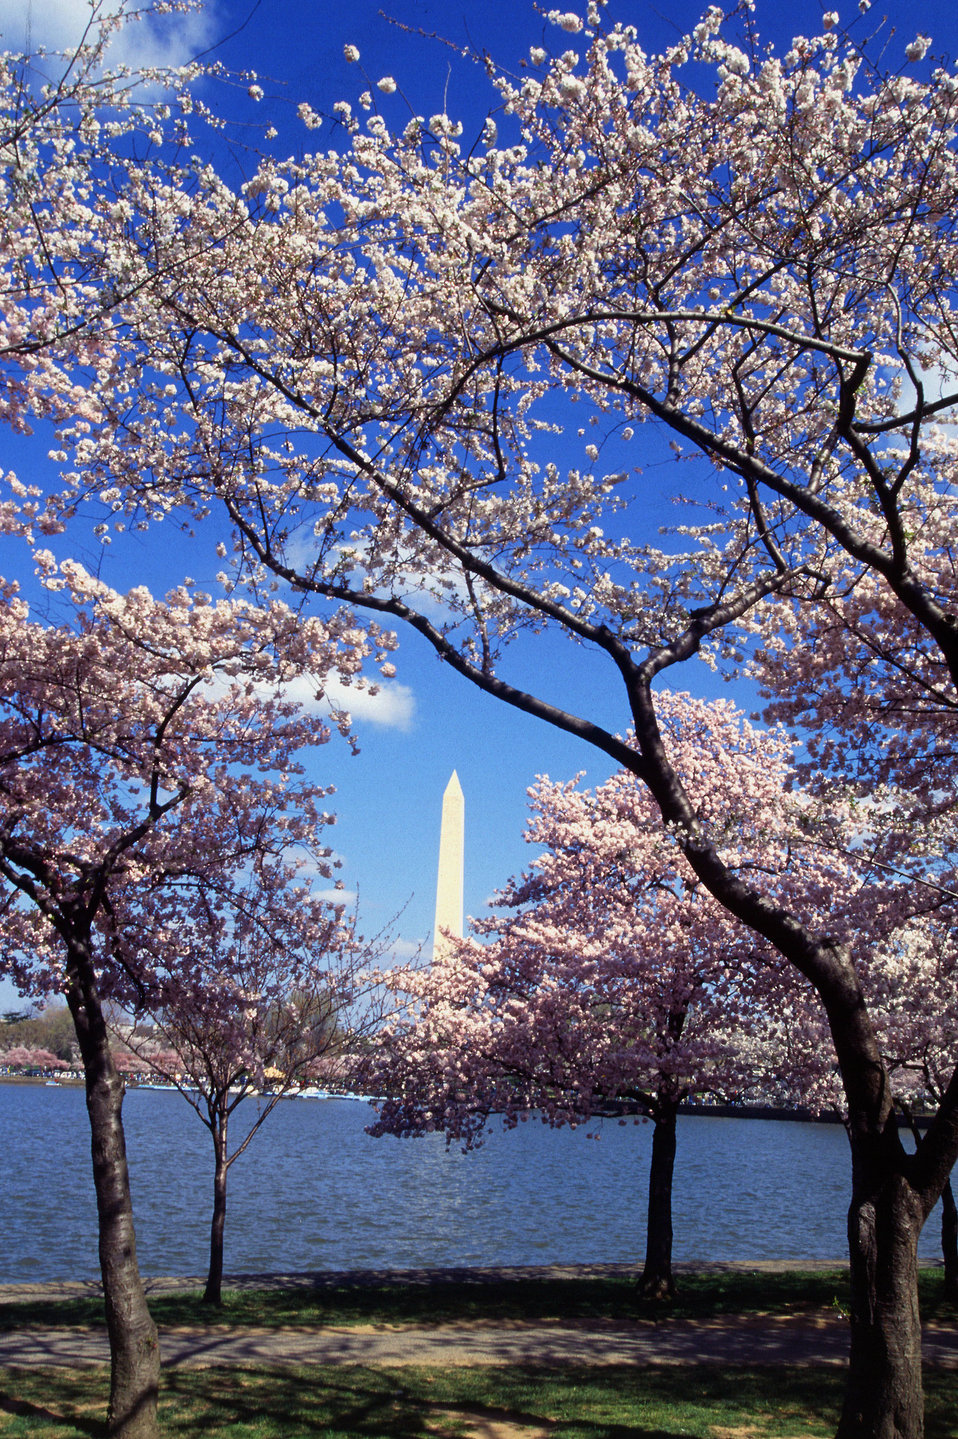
Cherry trees from Japan ring the Tidal Basin in Washington, D.C.